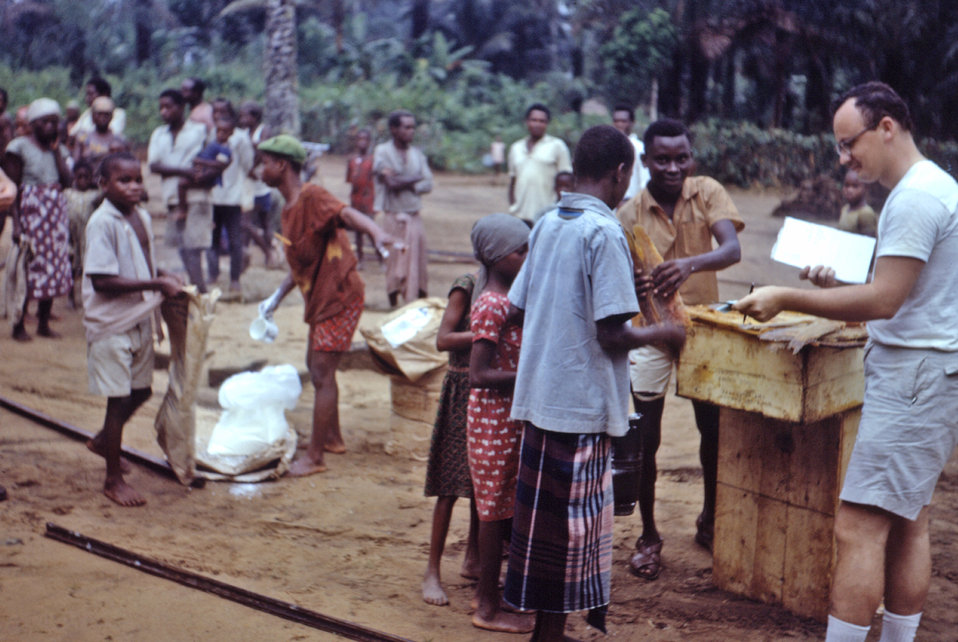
This late 1960s photograph shows Karl Western, a CDC EIS officer, checking the ration card of a Nigerian villager who received a helping of dry milk powder, or corn soya mix, both of which are high in protein.